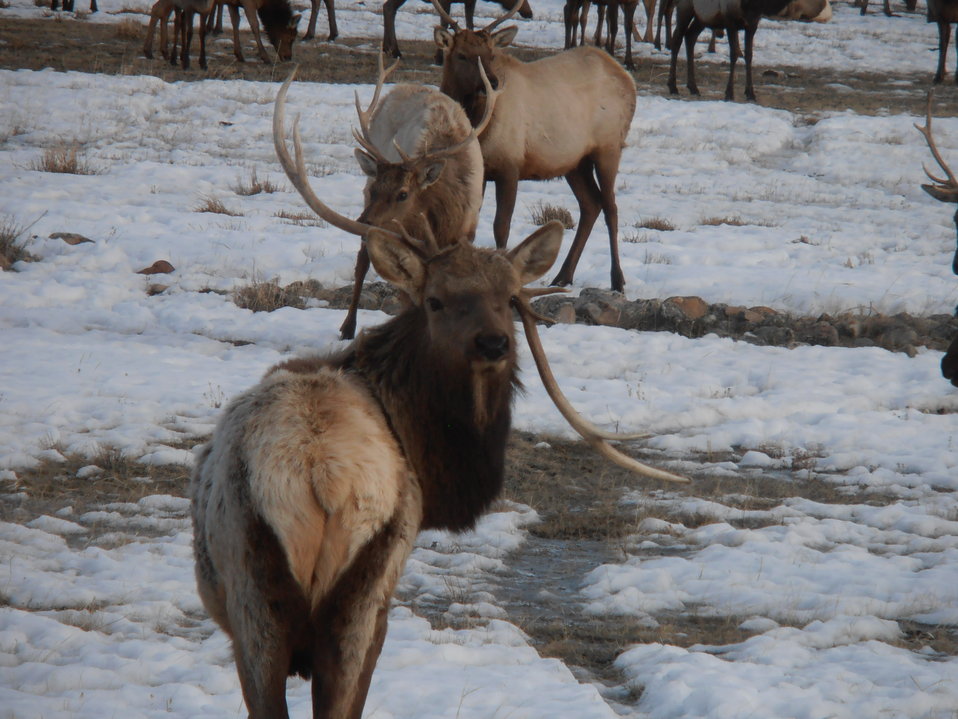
Which Way is Up?

Refuge staff have seen this bull elk throughout the winter, distinguishable by his abnormal left antler.

Credit: USFWS / Dave Dunlap, National Elk Refuge volunteer